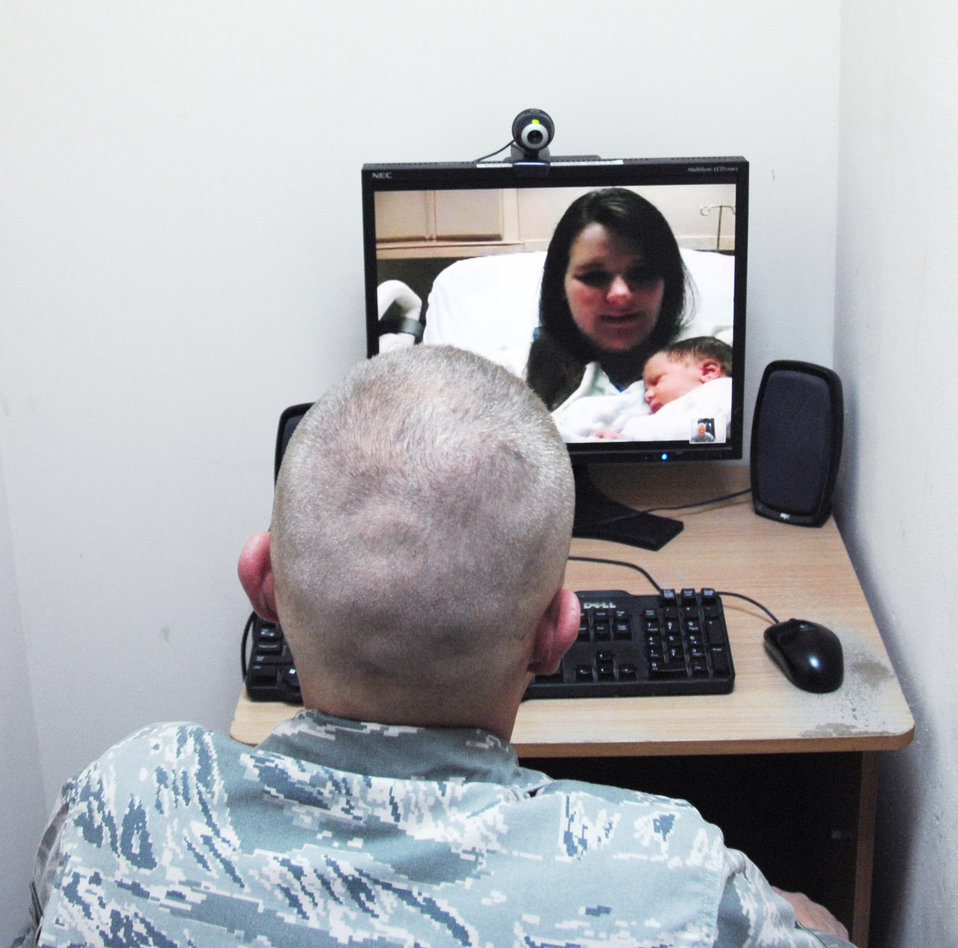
Airmen welcomes first child via Web cam

Senior Airman Daniel Warila chats via Web cam with his wife, Skye, and their newborn son, Lucas, Feb. 19 from an air base in Southwest Asia. Airman Warilla was able to watch Lucas' birth live. Airman Warila is a 380th Expeditionary Maintenance Squadron aerospace ground equipment mechanic.